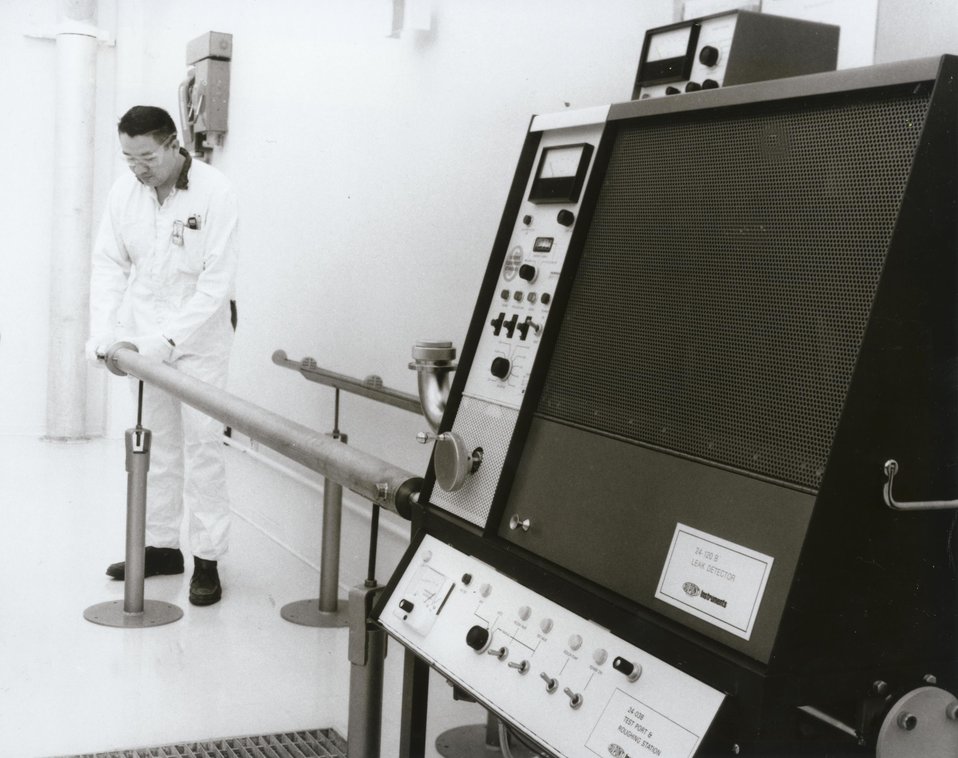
Weld integrity of every 94-inch long uranium-plutonium oxide fuel pin fabricated in support of the US AEC liquid metal fast breeder reactor program is tested in a sensitive helium leak detector.
c.1974